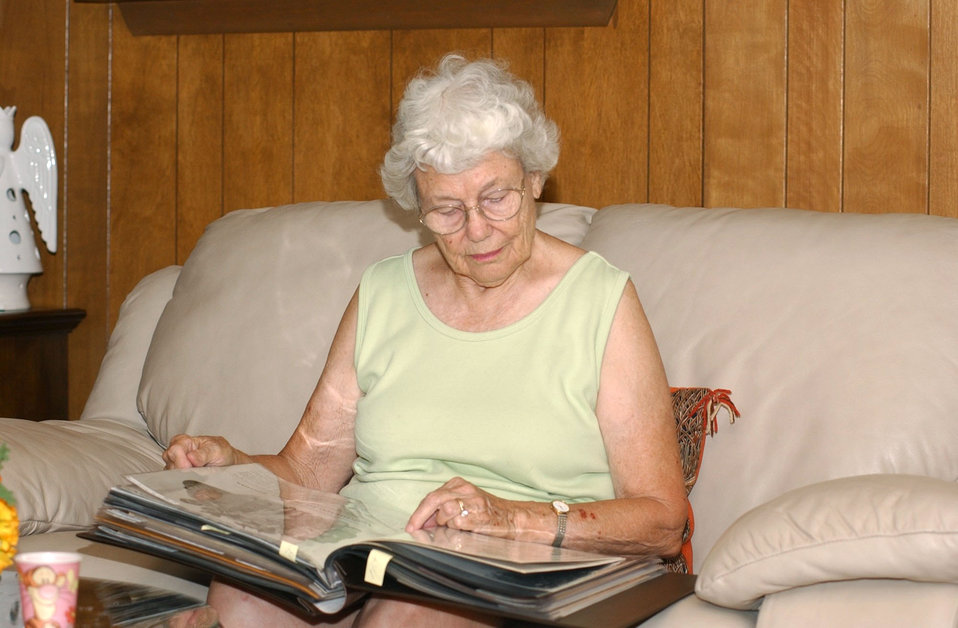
Not-so-common POW: Grandmother tells of imprisonment

SAN ANTONIO -- Liz Irvine looks at one of her scrapbooks full of original documents and mementos of her three years of imprisonment in the Philippines. Her parents had been American school teachers in the Philippines for almost 20 years when World War II broke out.